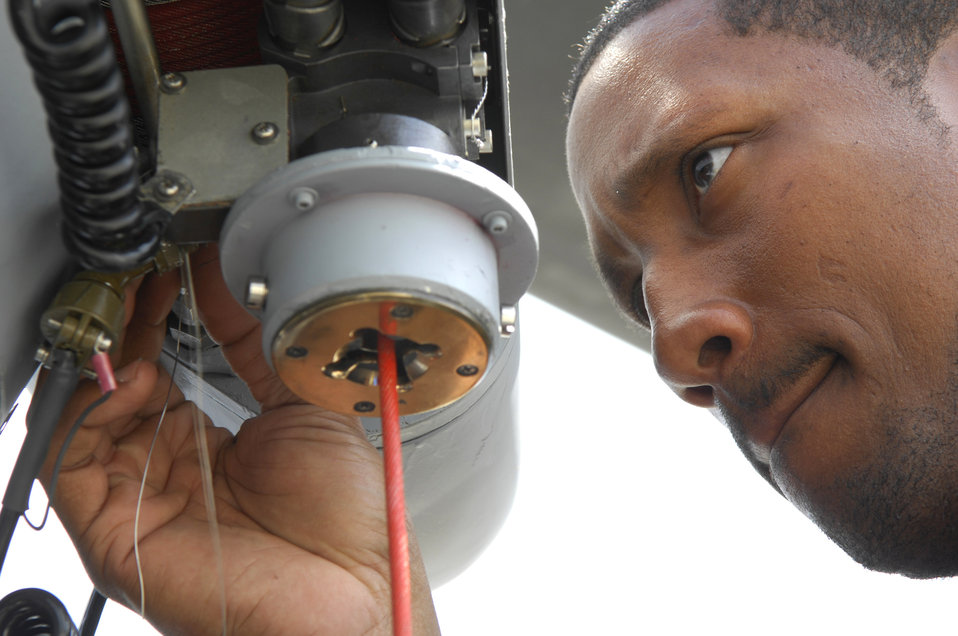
HH-60G Pave Hawk

Staff Sgt. Ray Campbell safety-wires a rescue hoist electrical connector April 1 on an HH-60G Pave Hawk helicopter at Moody Air Force Base, Ga. All critical connectors and bolts on a Pave Hawk are secured with steel safety wire to keep them from falling off. Sergeant Campbell is an electrical and environmental technician with the 723rd Aircraft Maintenance Squadron.